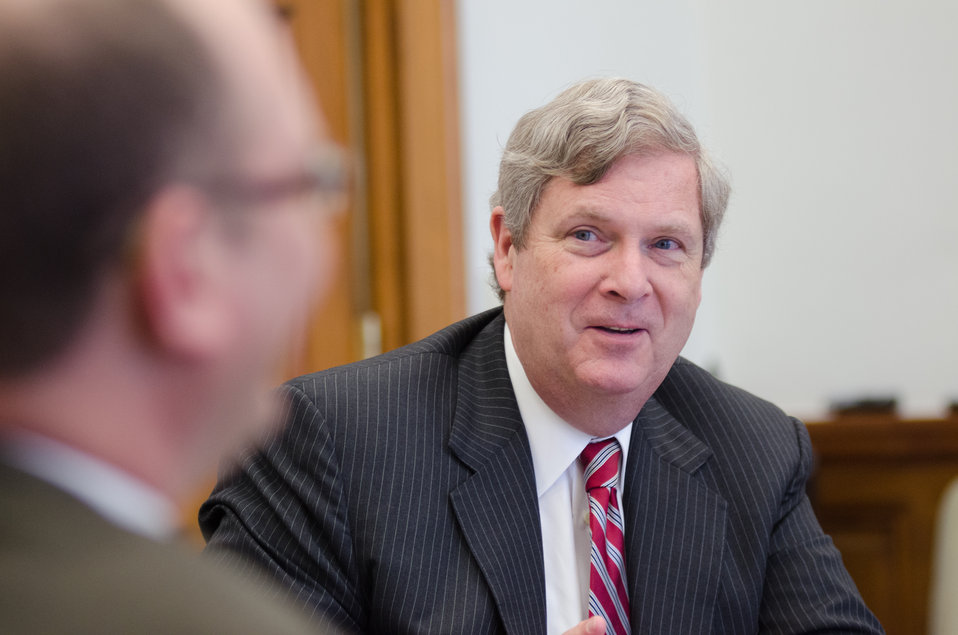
U.S. Department of Agriculture (USDA) Secretary Tom Vilsack, right, listens to Office of Ethics Branch Chief Ed Peterman, discuss the roles they play within the department, during a Brown Bag Lunch that he periodically has with employees, in his conference room, on Tuesday, April 9, 2013, in Washington, D.C.